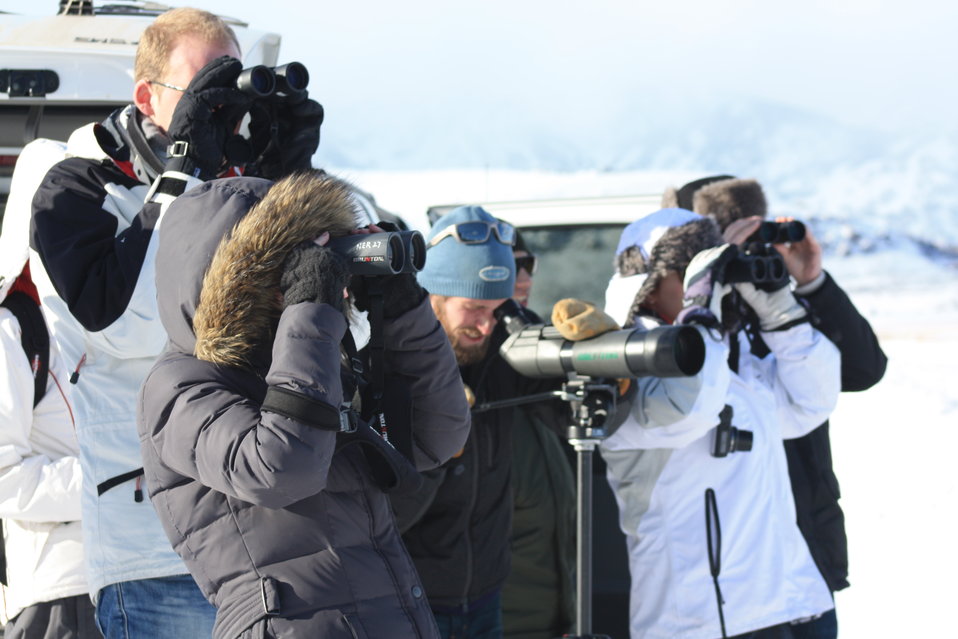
Winter Wildlife Excursions

National Elk Refuge wildlife excursions are offered several days per week during the winter season to those interested in a guided van tour along the Refuge Road. The program is offered free of charge.